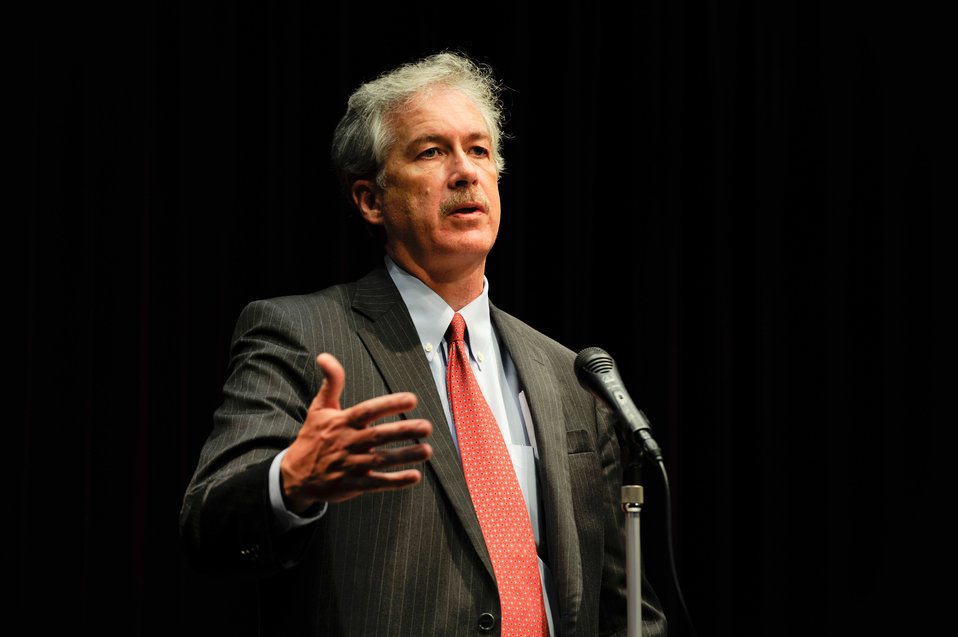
Deputy Secretary Burns Discusses Increasing U.S. Engagement in the Asia Pacific Region

U.S. Deputy Secretary of State William Burns discusses increasing U.S. engagement in the Asia Pacific region, including establishing a positive relationship with China, working towards North Korea's denuclearization, and building a new regional architecture, at the University of Tokyo in Japan on October 27, 2011.